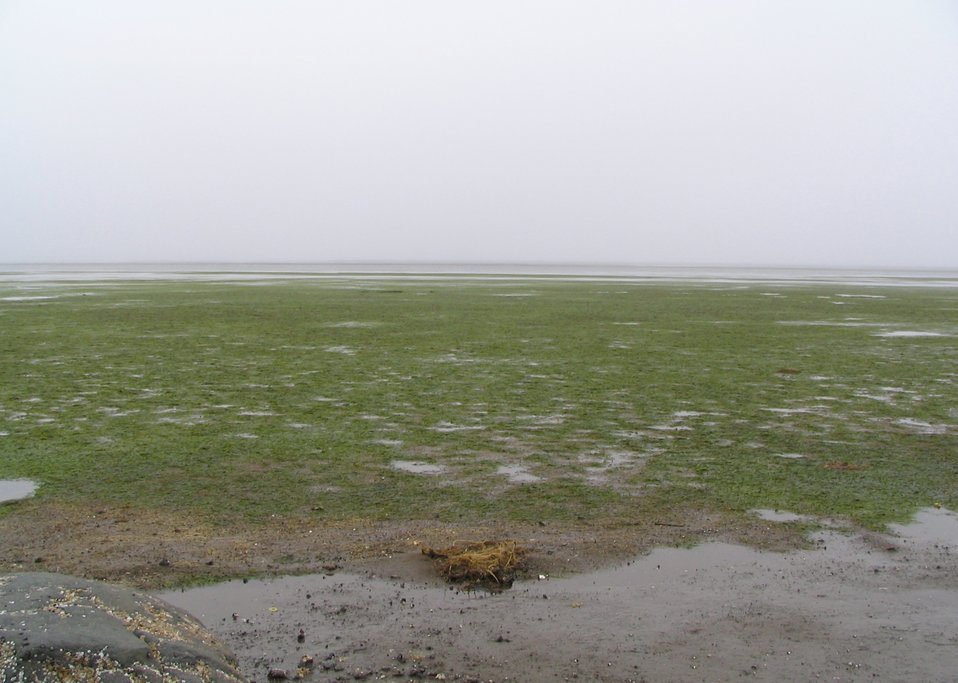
Eelgrass in Kinzarof Lagoon

Kinzarof Lagoon, Izembek National Wildlife Refuge